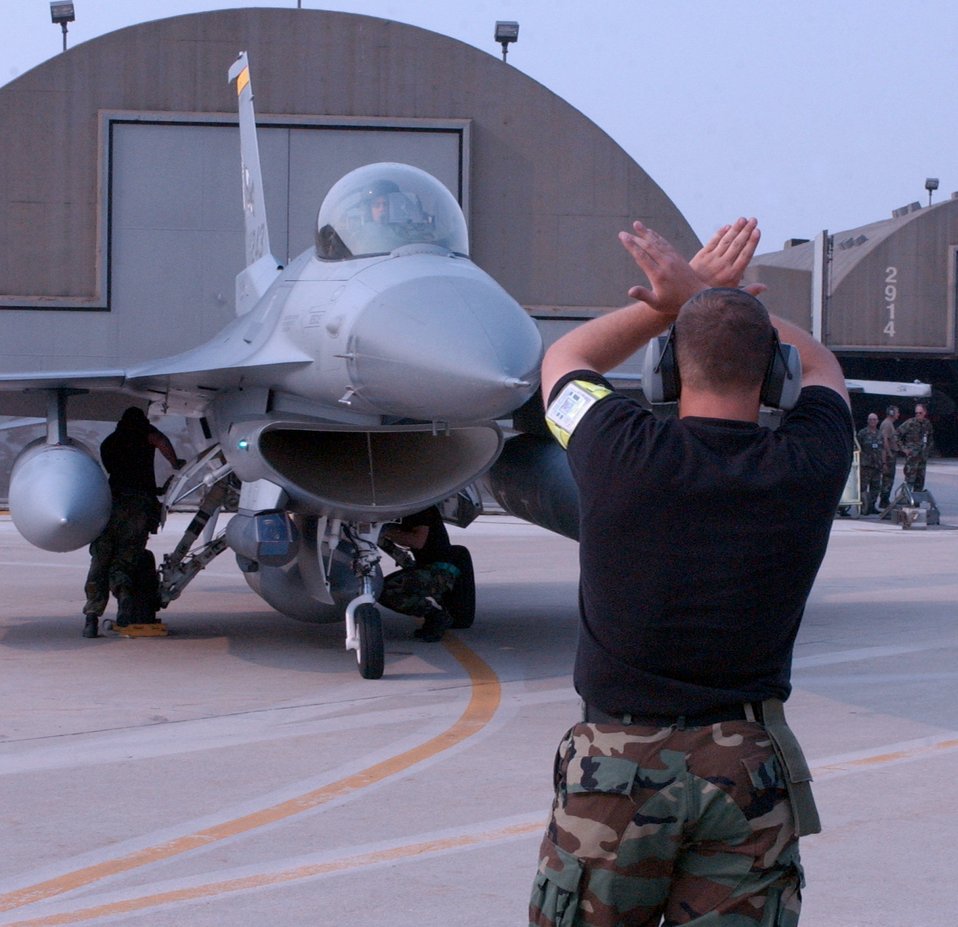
Three F-16 wings deploy to Korea

A crew chief guides an F-16 Fighting Falcon from the New Mexico Air National Guard's 150th Fighter Wing into place at Kunsan Air Base, South Korea. Elements of fighter wings from three Air National Guard units have deployed here in support of the air expeditionary force.